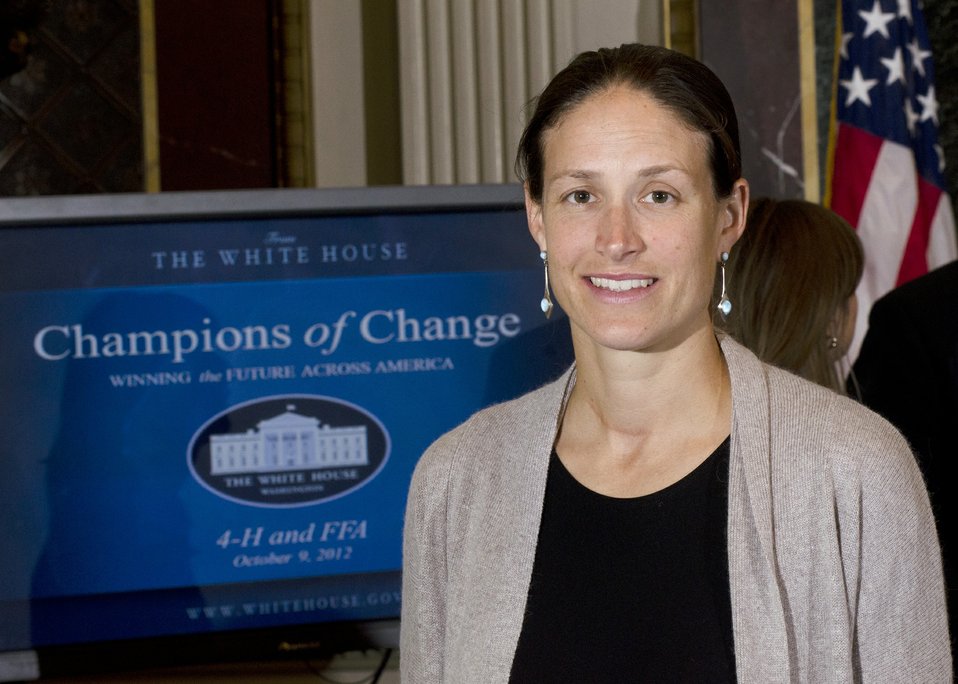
Champion of Change recipient Jessica McAtamney in front of the Champions of Change sign at the Executive Office Building in Washington, D.C. on Oct. 9, 2012. McAtamney is an agricultural educator at W.B. Saul High School of Agricultural Sciences in Philadelphia, PA. Jessica serves as FFA advisor to one the nation’s largest FFA chapters, assisting Saul’s fourteen agricultural educators to bring the FFA alive at the urban Philadelphia chapter. As the Land Judging Career Development Event Coach and Agriscience Fair coordinator, Jessica facilitates the Chapter’s participation in local leadership events, competitions, and conferences. This is just one more chapters in Jessica’s story of public service. She is a returned Peace Corps volunteer and a former participant in the Fulbright Japan-U.S. Teacher Exchange Program for Education for Sustainable Development.